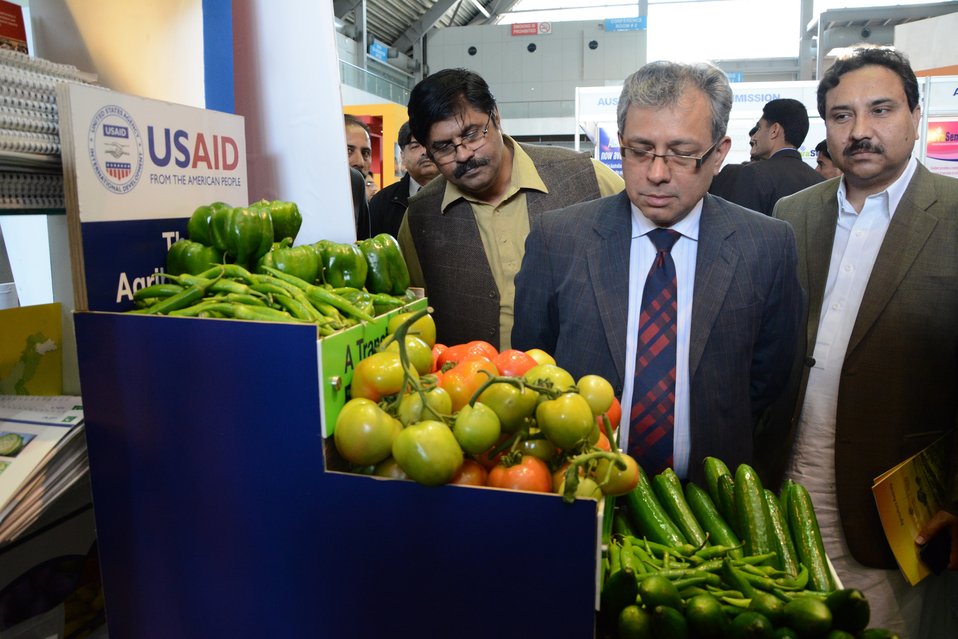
TAP1